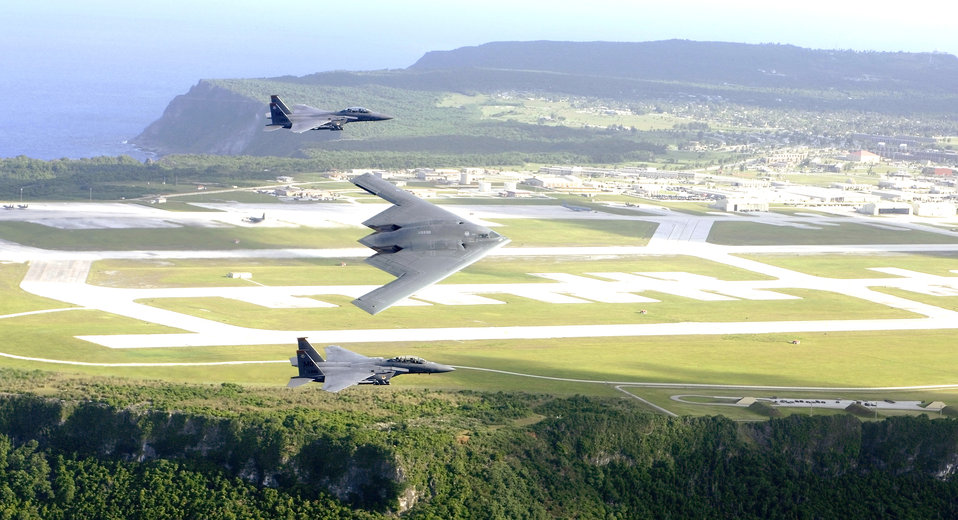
Joining forces

ANDERSEN AIR FORCE BASE, Guam -- F-15E Strike Eagles and a B-2 Spirit bomber fly in formation over the base. The Strike Eagles are with the 391st Expeditionary Fighter Squadron from Mountain Home Air Force Base, Idaho. The bomber is from the 325th Expeditionary Bomb Squadron from Whiteman AFB, Mo.